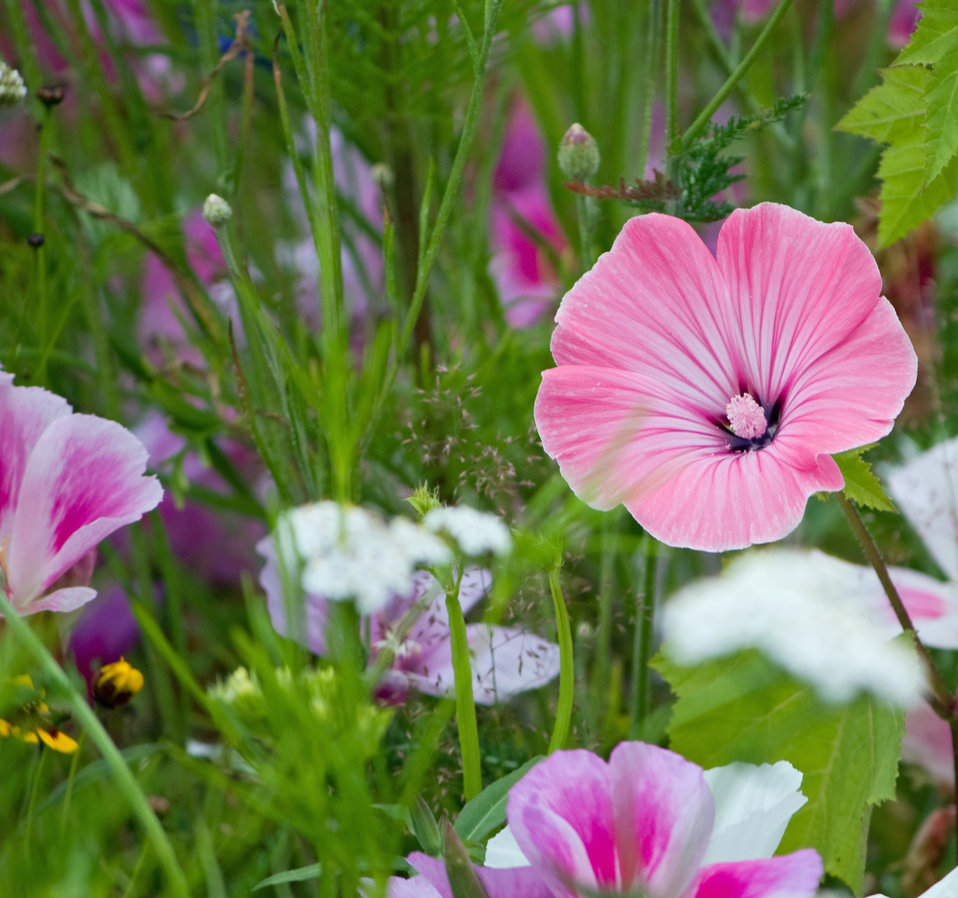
Wild flowers

Close-up of a beautiful pink wild flower in meadow.